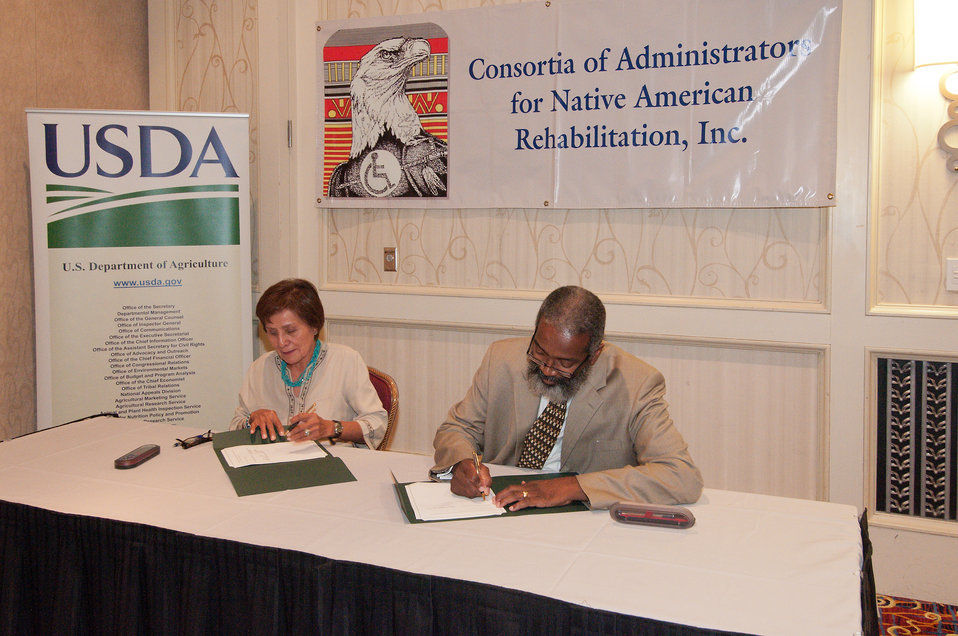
Treva Roanhorse (left), President Consortia of Administrators for Native American Rehabilitation and Dr. Gregory Parham, Acting Assistant Secretary of Administration, United States Department of Agriculture sign a Memorandum of Understanding agreeing to collaboration on improving employment for Native Americans and Alaska Natives in Crystal City, Virginia, on Tuesday, August 28, 2012.